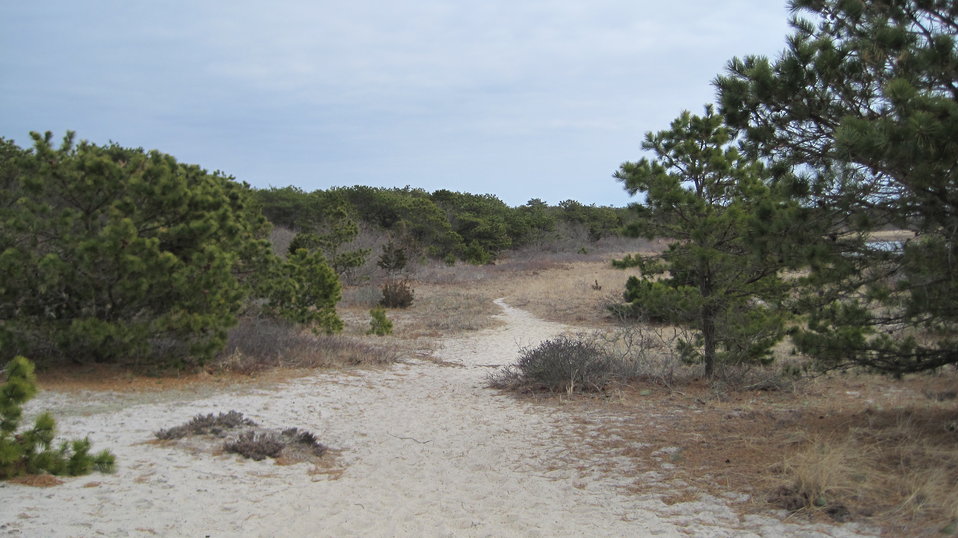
Monomoy National Wildlife Refuge

The 3/4 mile Morris Island Trail takes visitors through a variety of coastal habitats.

Credit: Keith Shannon/USFWS

Monomoy National Wildlife Refuge is part of the Eastern Massachusetts National Wildlife Refuge Complex.